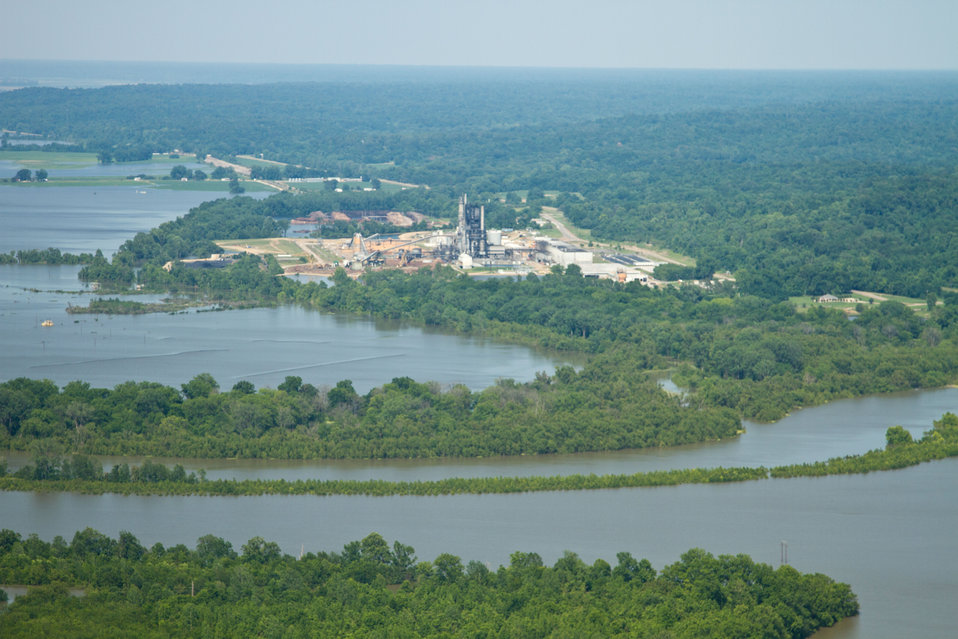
Aerial view of flooding of the Mississippi River, on Thursday, May 19, 2011 photographed from the MS side.